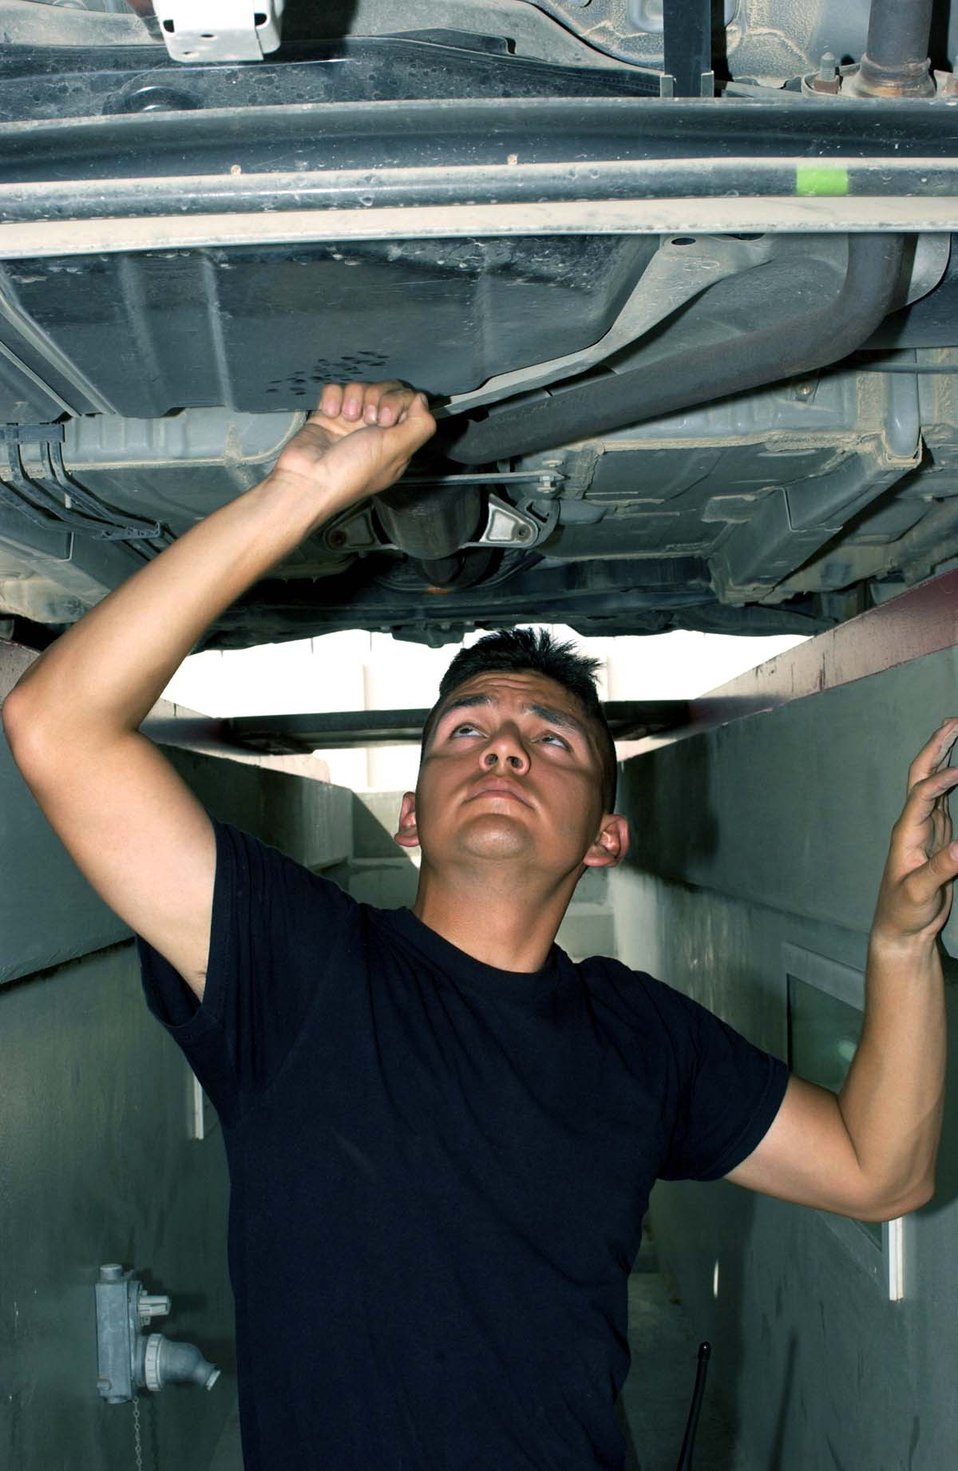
Teamwork provides best security

SOUTHWEST ASIA -- Airman 1st Class Matthew Torres inspects a vehicle for weapons, explosive devices and other unauthorized items before it enters the base. Security forces Airmen inspect all vehicles that enter the base including a search with military working dogs. He is assigned to the 380th Expeditionary Security Forces Squadron at a forward-deployed location and is deployed from Ellsworth Air Force Base, S.D.